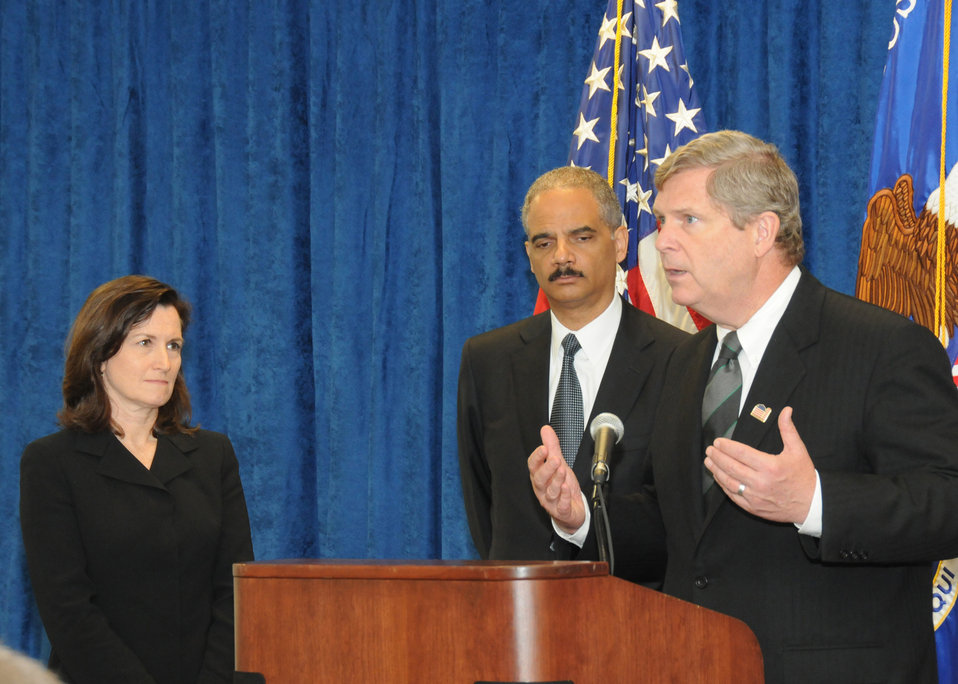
Agriculture Secretary Tom Vilsack holds a press conference after the early morning listening session of the U. S. Department of Justice and the U.S. Department of Agriculture ‘s “Agriculture and Antitrust Enforcement Issues in Our 21st Century Economy “ with poultry farmers at Alabama A & M University in Normal, AL, on Friday, May 21, 2010. The late morning listening in Normal, AL, on Friday, May 21, 2010. (Standing L to R of Secretary Vilsack is Assistant Attorney General for Antitrust Christine Varney and Attorney General Eric Holder) USDA photo 10di1361-242.